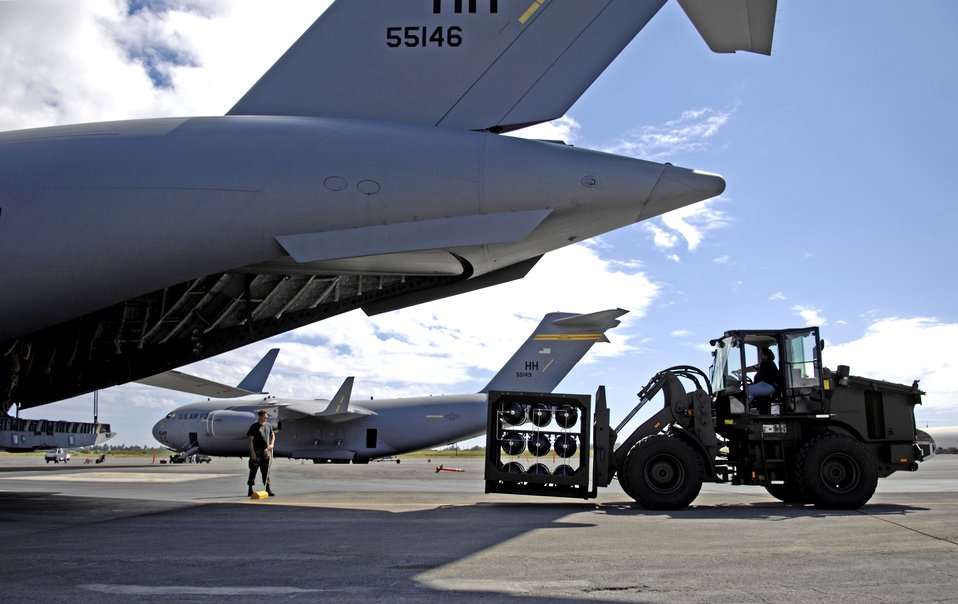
Alternate Energy Source

The HydraFLX System is brought up to the back end of a C-17 Globemaster III to demonstrate its mobile capability at Hickam Air Force Base, Hawaii Oct. 18, 2006. The HydraFLX System is being tested by the Air Force as an alternate energy source. It will generate ultra-pure H2 (hydrogen) from water in a flexible pressure management process for fueling buses, tow-tractors, vans, sedans and ground support equipment. The system can also be deployed anywhere and operate in hostile theaters without infrastructure or pipelines.